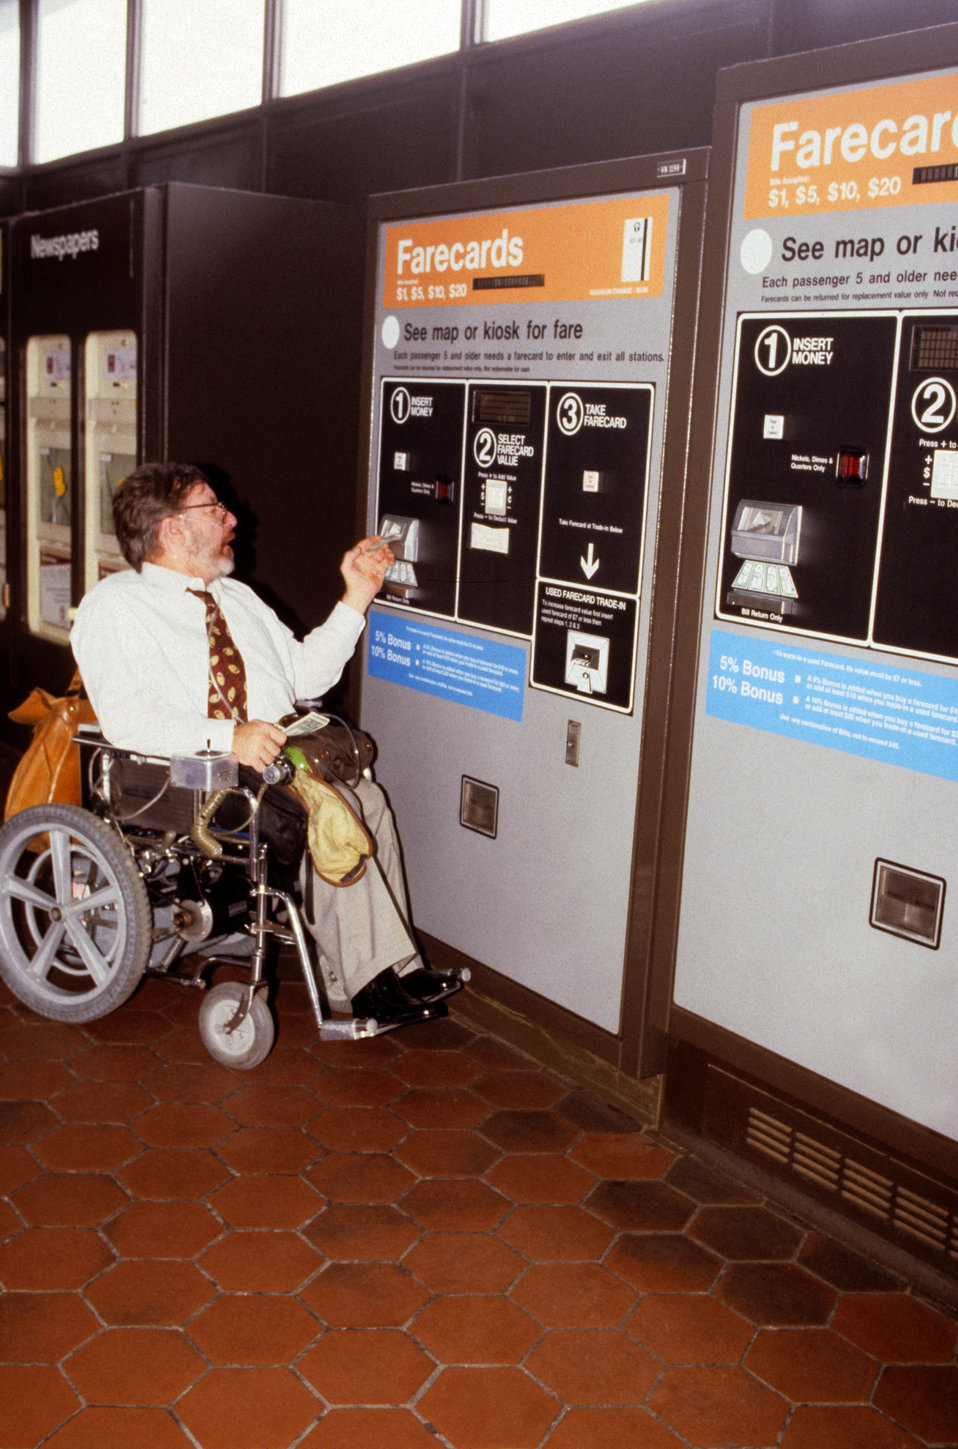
Depicted in this 2004 image was a wheelchair-seated man who was in the process of purchasing a ticket from an automatic ticket dispensing machine at a mass transit train station. Self-serve ticket dispensing machine controls should be within easy reach, have audible and visual output announcing confirmation of actions, and be equipped with tactile instructions. This machine met these characteristics. However, the reach required is a little too high for easy control panel interaction. The machine's interface needed additional study to make it more universal, with more consideration paid to the mobility-impaired. 'The Center for Universal Design (CUD) is a national research, information, and technical assistance center that evaluates, develops, and promotes accessible and universal design in housing, buildings, outdoor and urban settings and related products.'